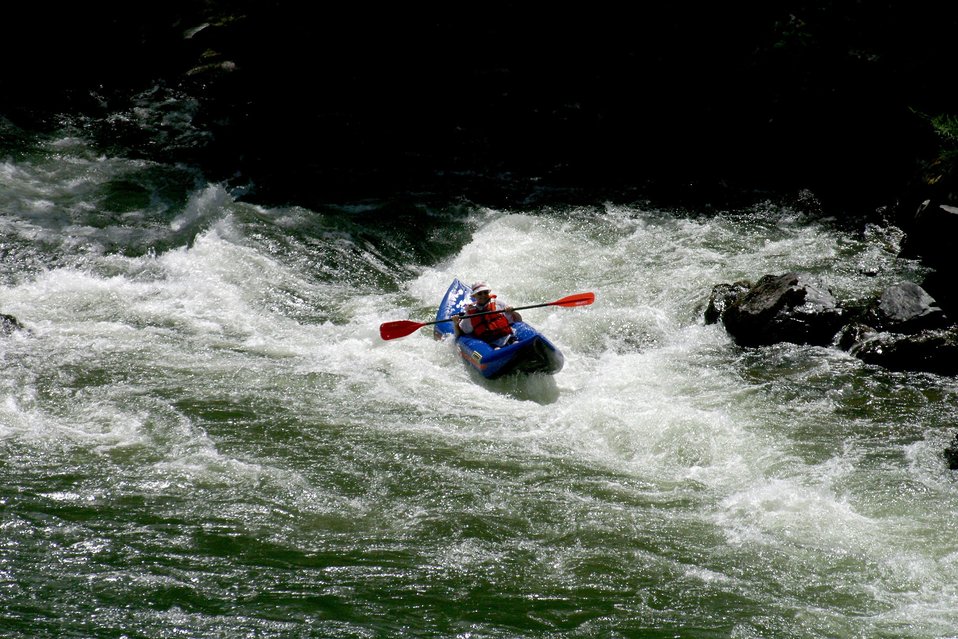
Boater at Grave Creek Falls